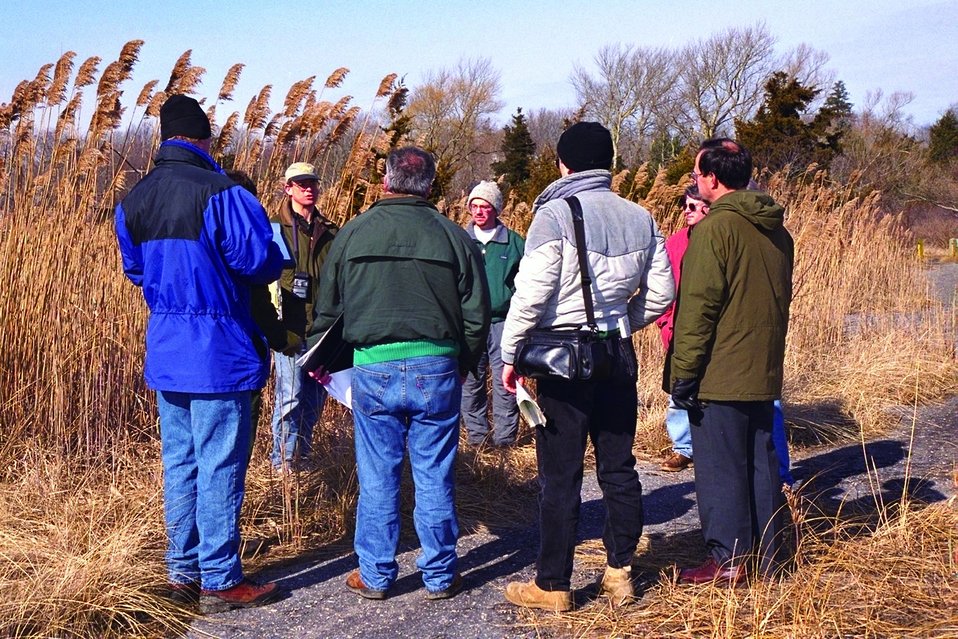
Eric Hutchins met with various restoration partners including the Lewis Berger group an engineering division that is offering pro bono services, a Town of Dennis representative, the state fisheries officer and others. The purpose of the pre restoration meeting was to assess restoration alternatives.